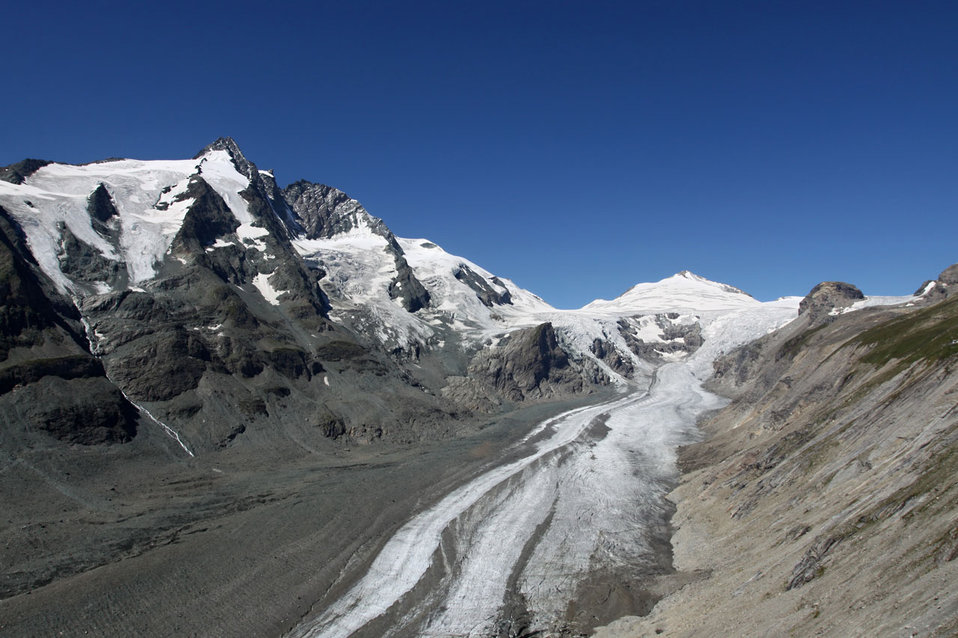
Grossglockner in austrian alps.